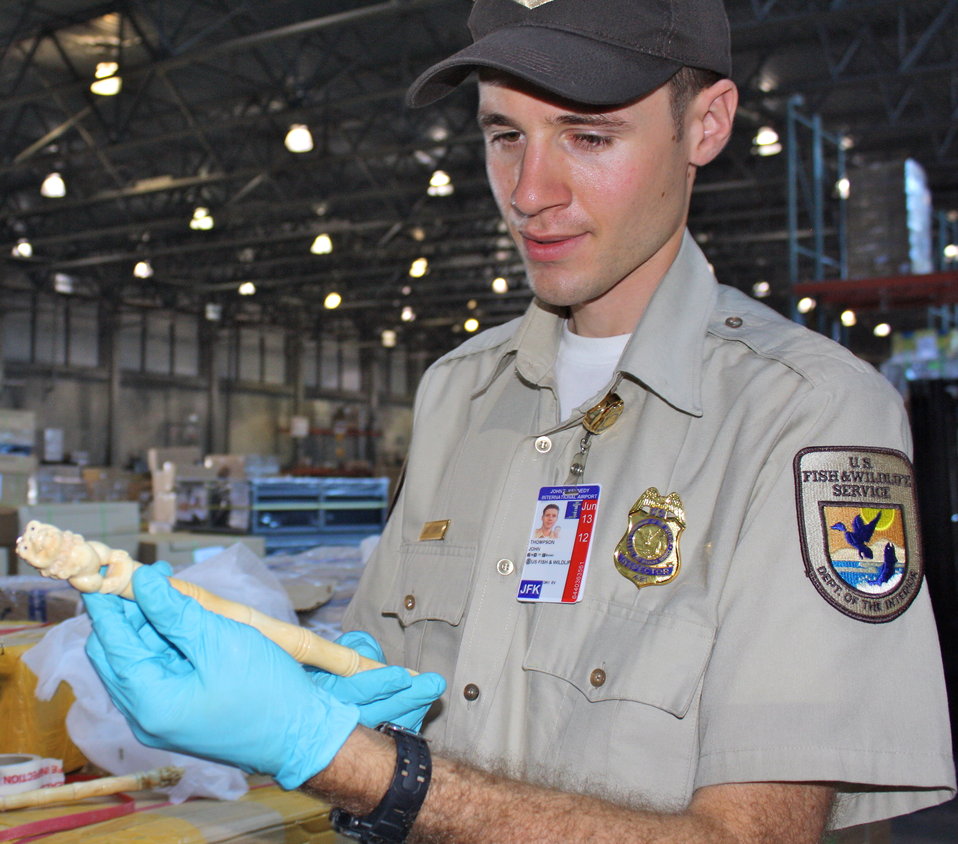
Inspector looks at an imported statue

Inspector from the Valley Stream, N.Y. Office of Law Enforcement looks at an imported statue.